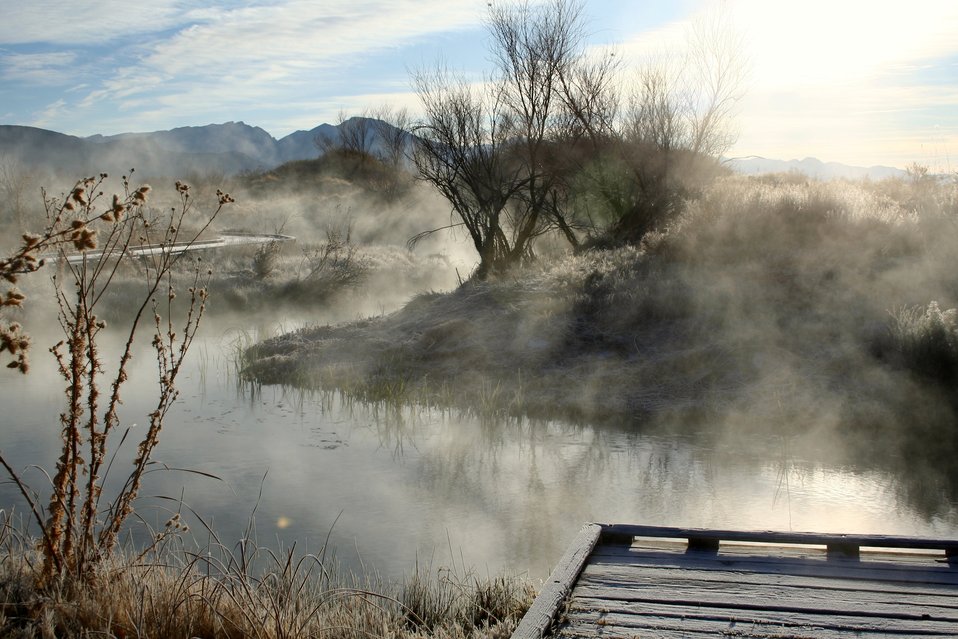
Ash Meadows NWR

Mist rises off the outflow stream from the naturally warm Crystal Springs pool at Ash Meadows National Wildlife Refuge in Nevada. (USFWS)